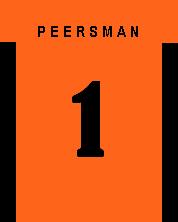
01peersman